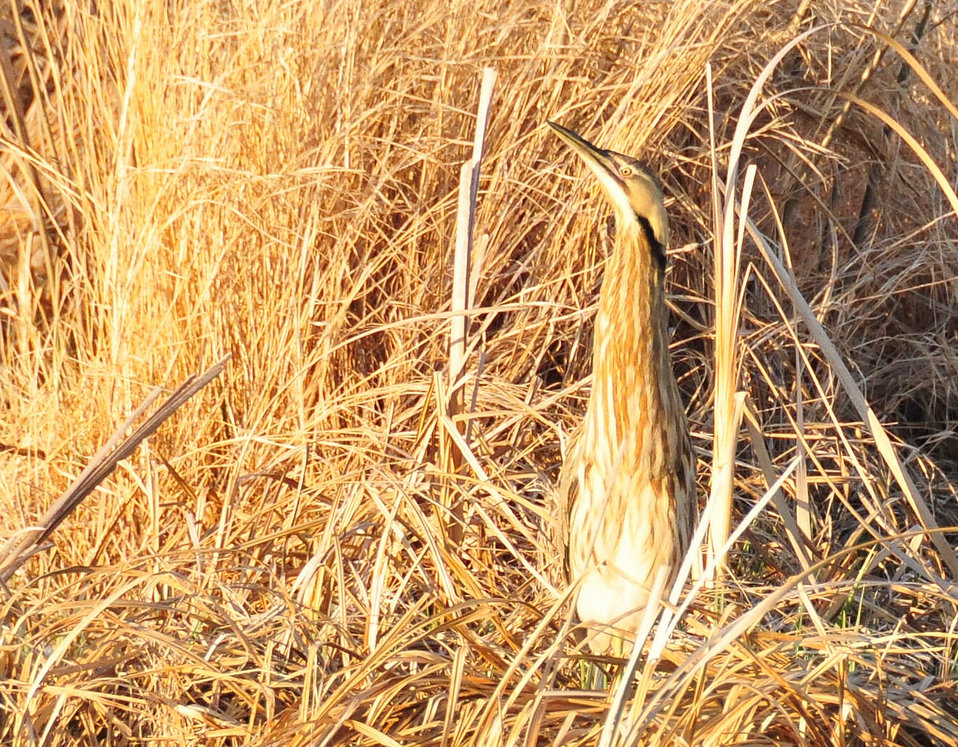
American Bittern Blending In On Lacreek NWR

American bitterns often stealth hunt and wait motion less blending in to the background.